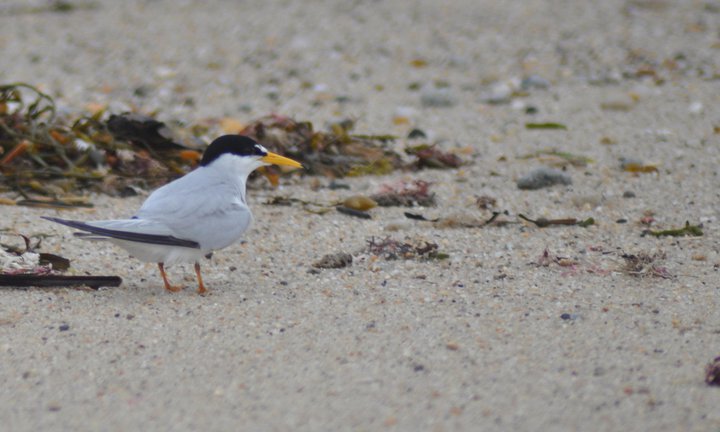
Least Tern

A least tern at the Nantucket National Wildlife Refuge, MA.